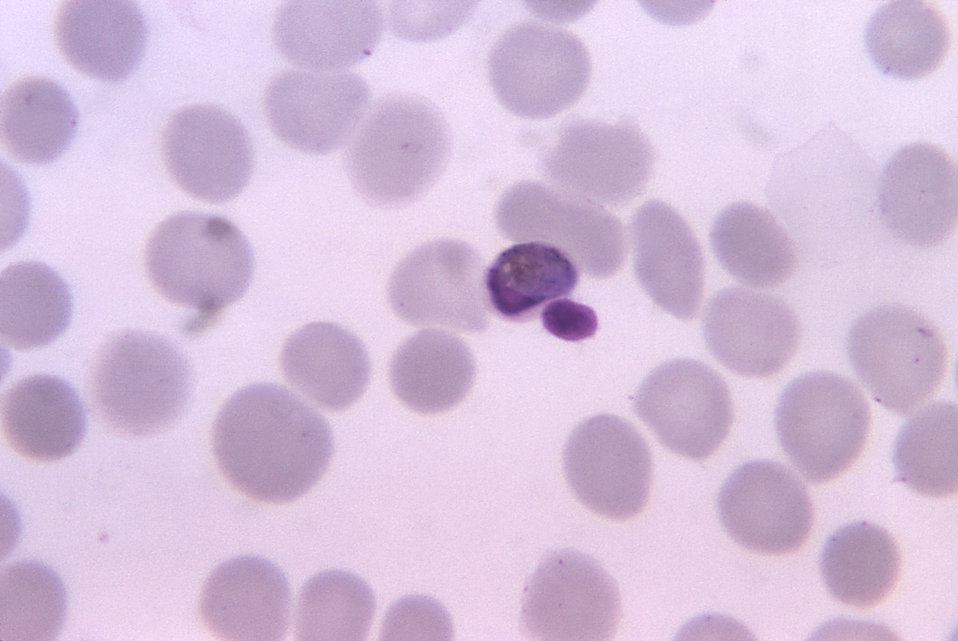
This thin film photomicrograph depicts a mature Plasmodium malariae trophozoite using Giemsa stain; Magnified 1125X.